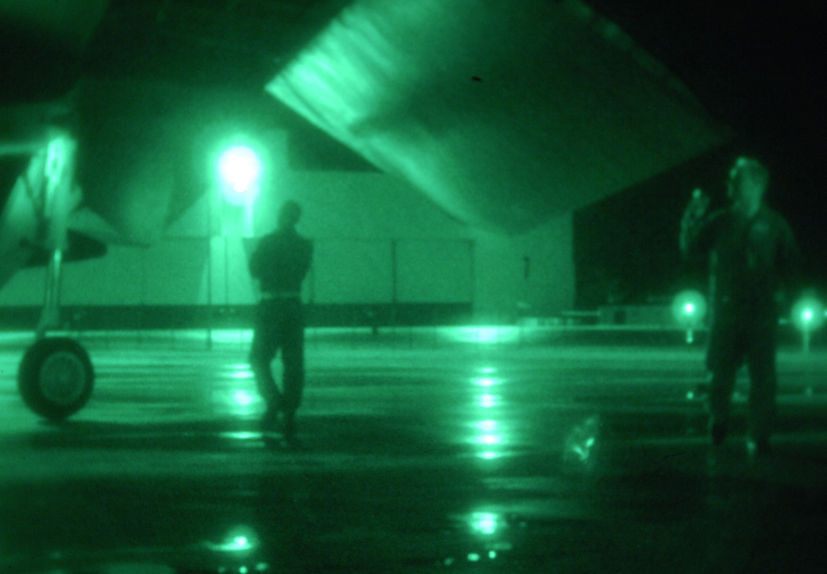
Nuclear evaluation mission

Aircrew members from the 23rd Bomb Squadron at Minot Air Force Base, N.D., perform a flight check on a B-52 prior to a Nuclear Weapon System Evaluation Program mission. After the checks are complete, the aircraft is launched for a five-hour mission to the Utah Test and Training Range and back.